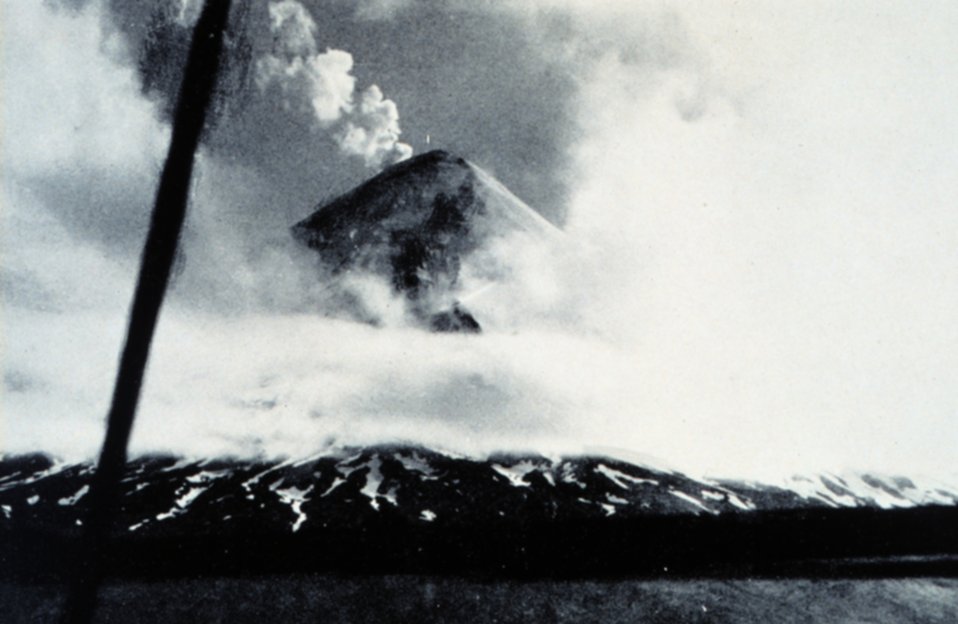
Mt. Cleveland, looking west from Applegate Cove.